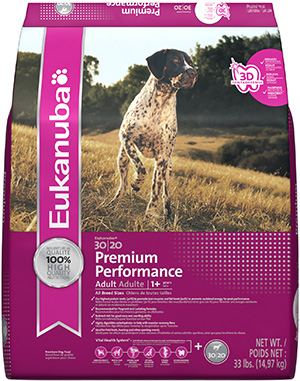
RECALLED – Dog and Cat foods - Dry

August 14, 2013 – Product Recall – P&G Voluntarily Recalls Limited Quantity of Dry Pet Food Due to Possible Health Risk.